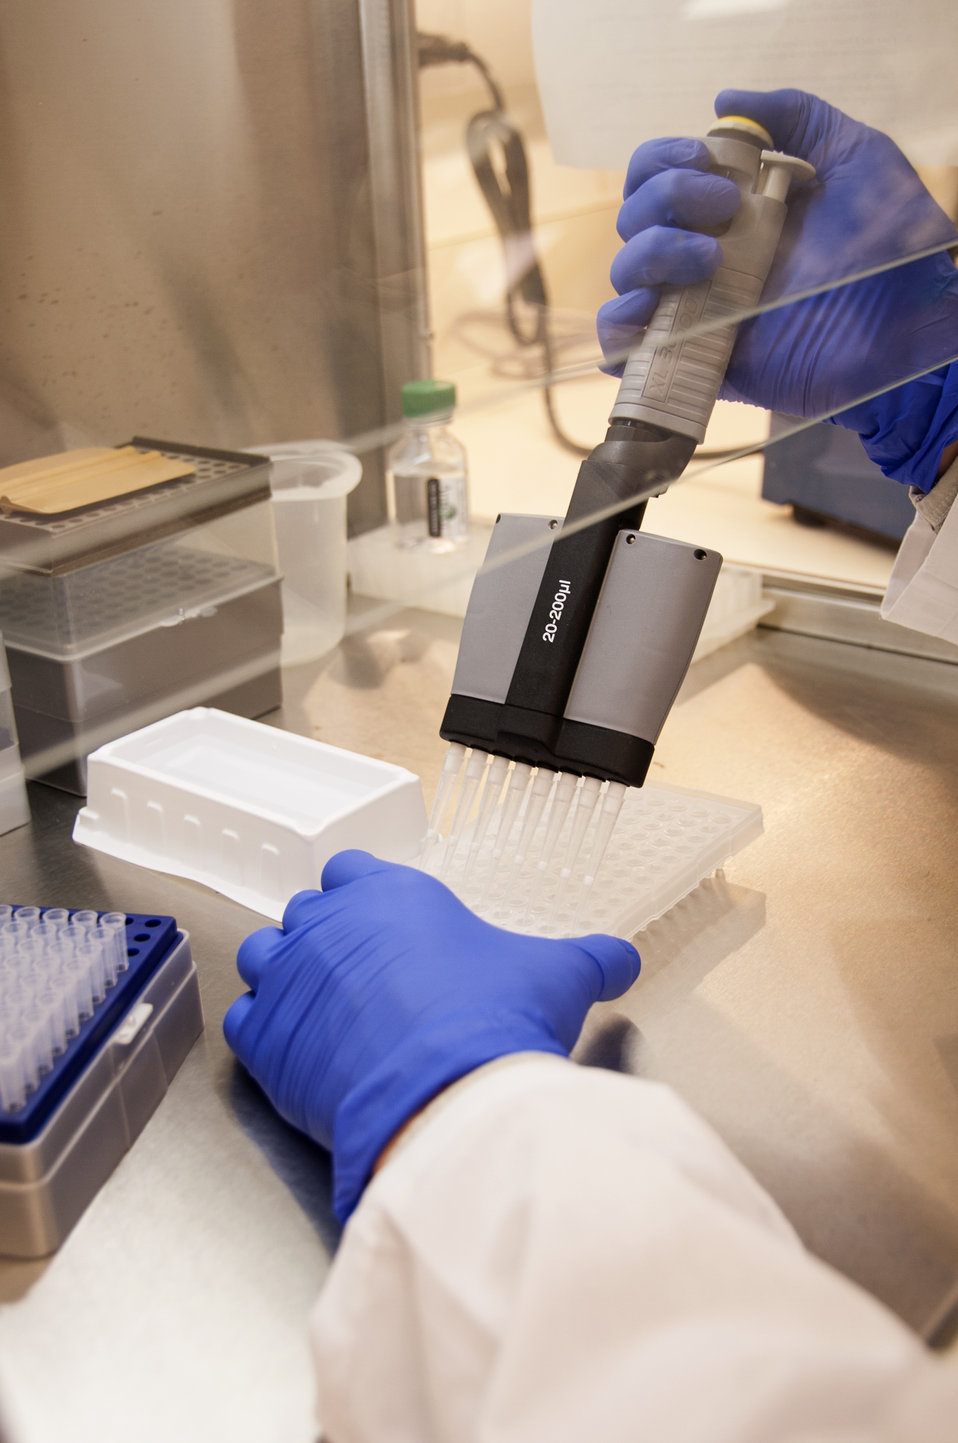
Stem Cell Research (0449)

Jessica Lo Surdo, M.S. (foreground), an FDA staff scientist, studies chain reactions in stem cells in an FDA laboratory on the National Institutes of Health campus in Bethesda, Md.

To learn more about stem cell research, read this FDA Consumer Update:

Adult Stem Cell Research Shows Promise

This photo is free of all copyright restrictions and available for use and redistribution without permission. Credit to the U.S. Food and Drug Administration is appreciated but not required.

Privacy and use information: www.flickr.com/people/fdaphotos/